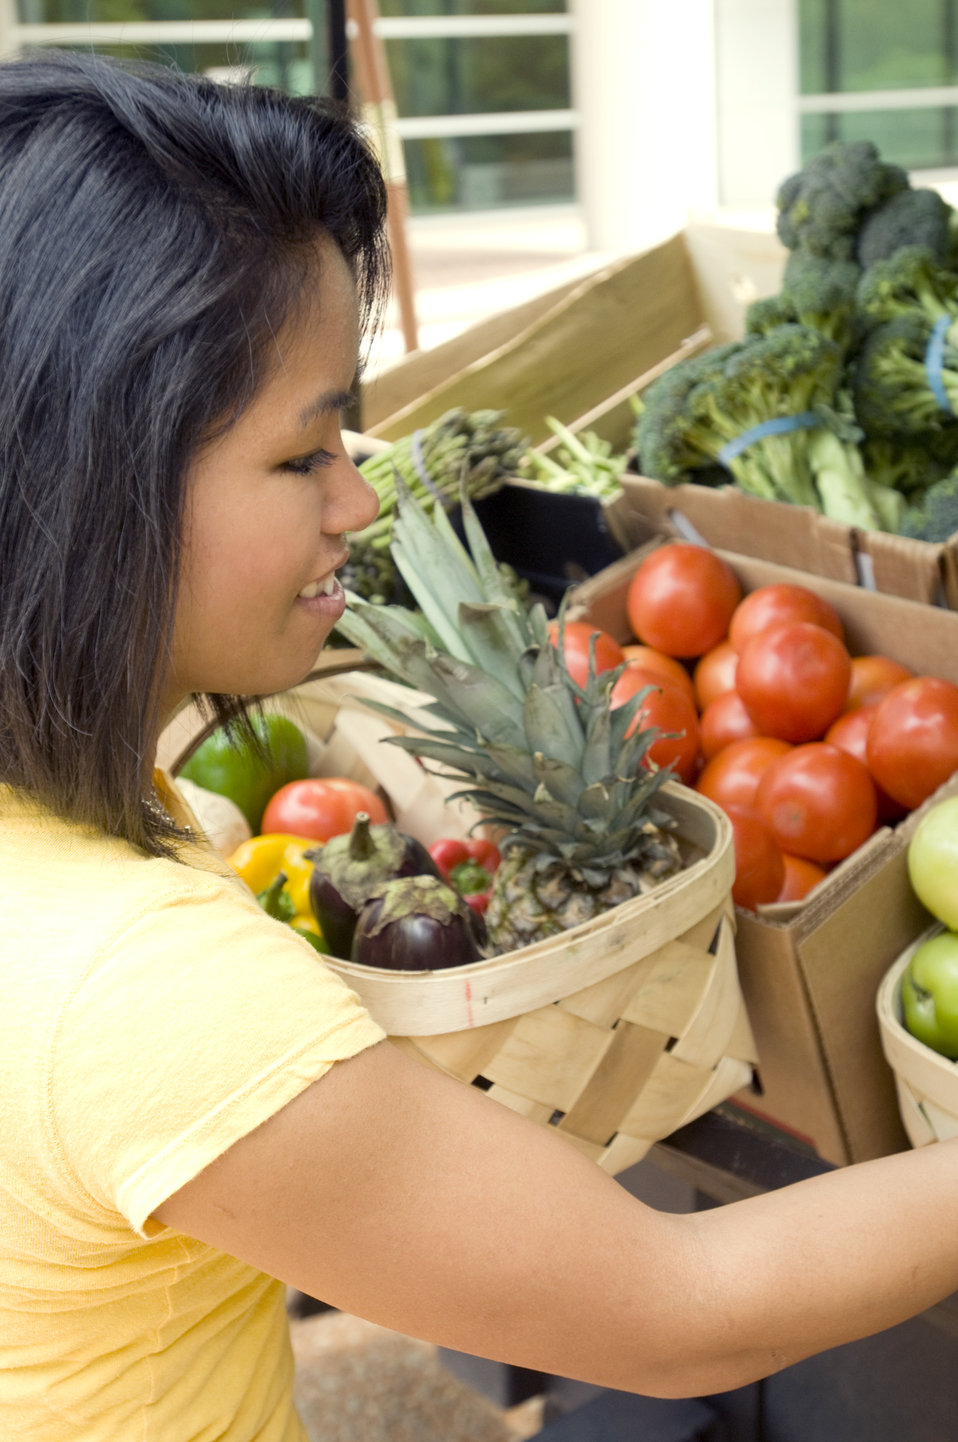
This photograph depicts a woman shopping at a mobile produce market, making healthy food choices from an array of fresh fruits and vegetables. After having made her choices, she had placed her selections into a woven wooden basket, which can be seen resting behind this shopper, upon the market trailer. Note some of the foods that were available at this mobile produce facility.